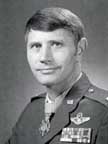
Leo Thorsness earned the Medal of Honor for one of the epic solo battles of the Vietnam War, but didn't know Congress had awarded it to him until years later. The award wasn't announced publicly; as Thorsness was a prisoner of war.